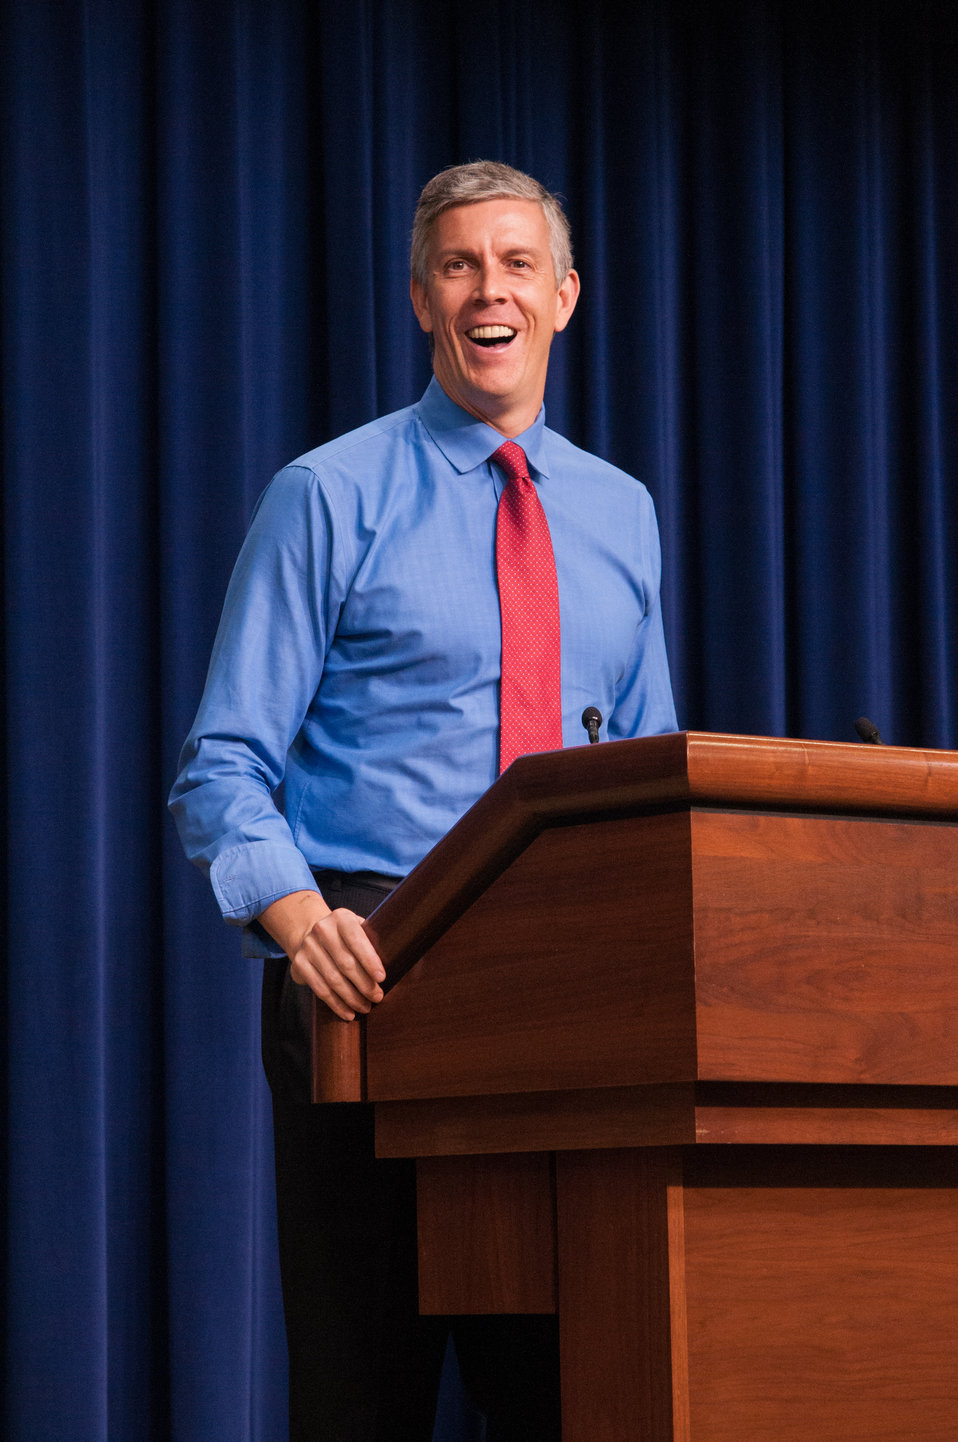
Education Secretary Arne Duncan speaks at a meeting of the White House Rural Council to an audience of the National State President’s Conference of the FFA on Wednesday, Jul. 24, 2013 in Washington, D.C. Secretary Duncan topics related to education and the importance of an education.